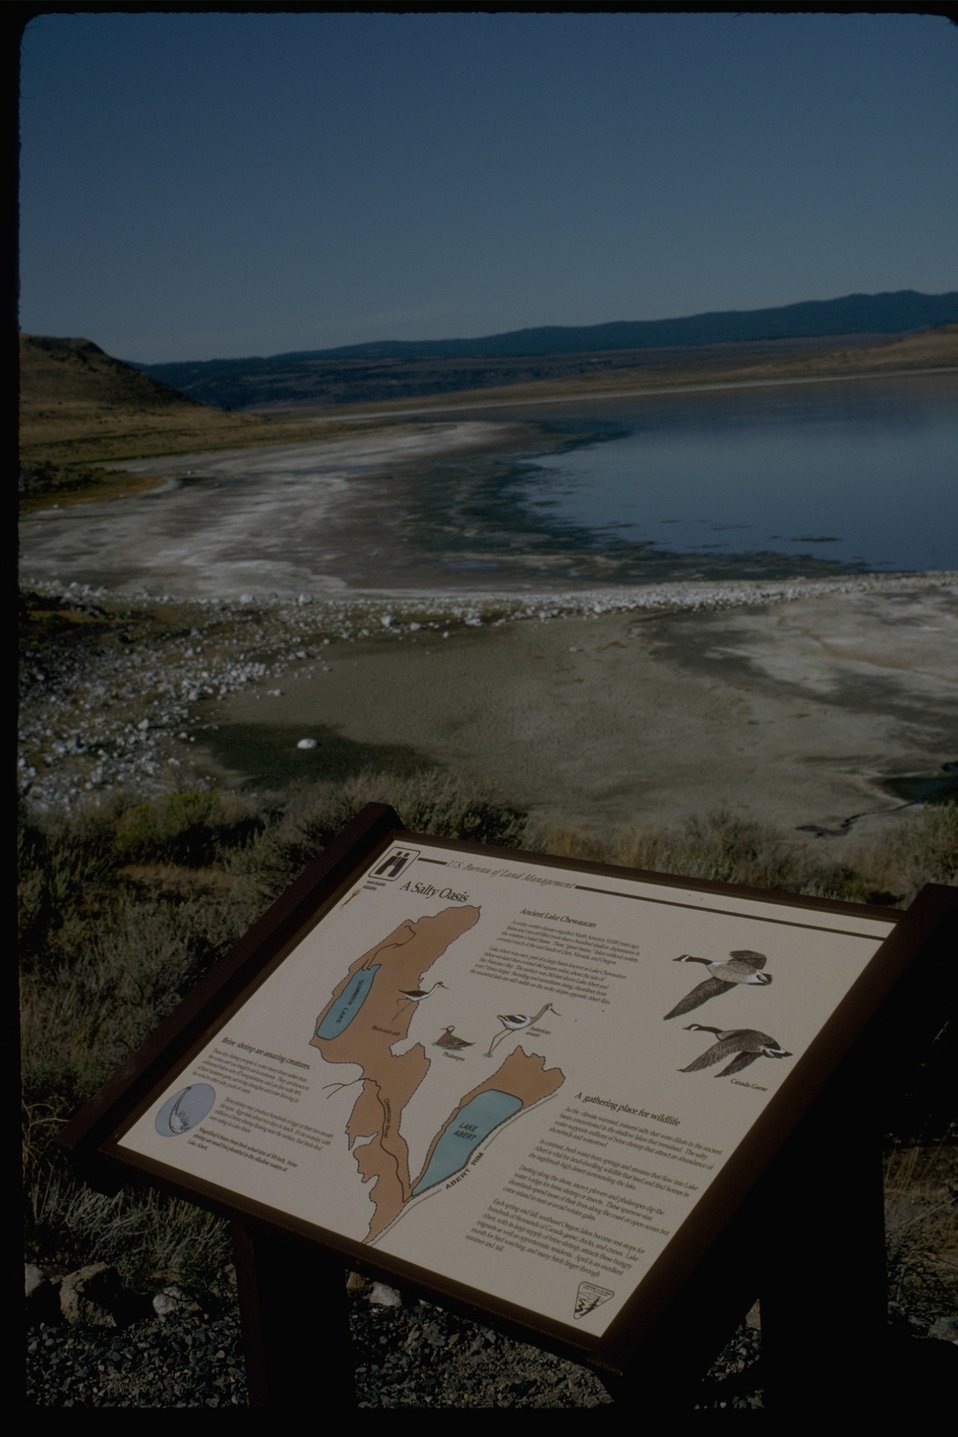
Abert Lake interpretive sign.